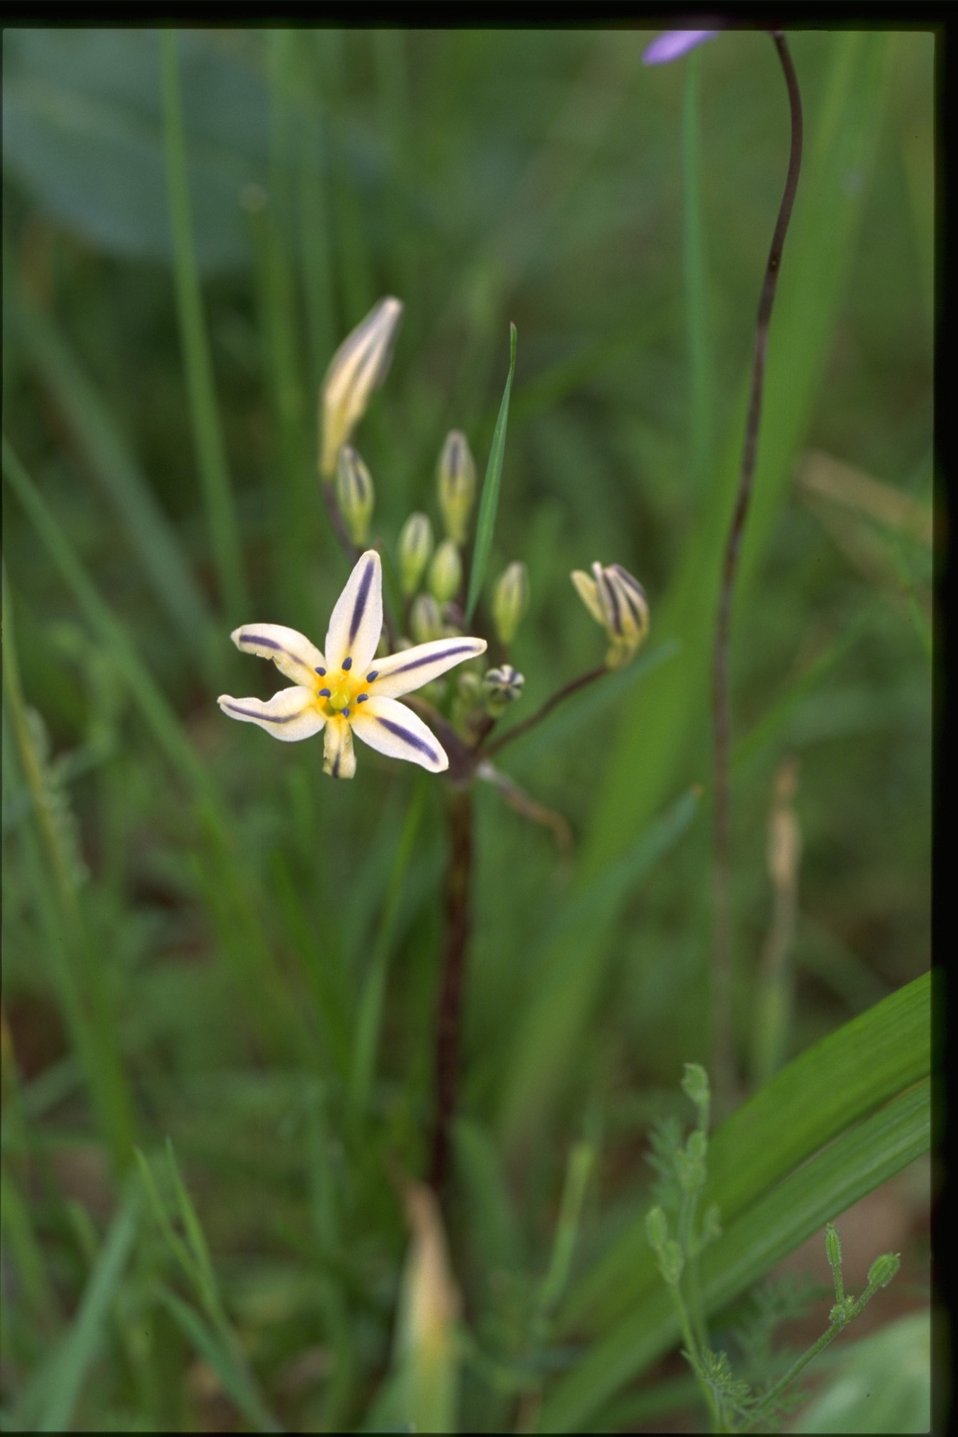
Medium shot of Brodiaea leachiae peck.